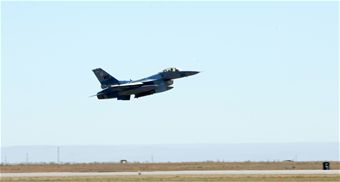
Gunfighter Flag wraps up

An F-16 Fighting Falcon from the 64th Aggressor Squadron at Nellis Air Force Base, Nev., takes off Sept. 24, 2009, from Mountain Home AFB, Nev., during Gunfighter Flag. With a mission to know, teach and replicate any threat friendly forces may face, pilots from the 64th AGS represented enemy aircrews as ?red air force? participants during the exercise. Gunfighter Flag, which ran from Sept. 14 through 24, was Mountain Home?s first large-scale, multi-national exercise which brought more than 450 personnel from the U.S. Air Force, U.S. Navy and Canadian air force to the base.